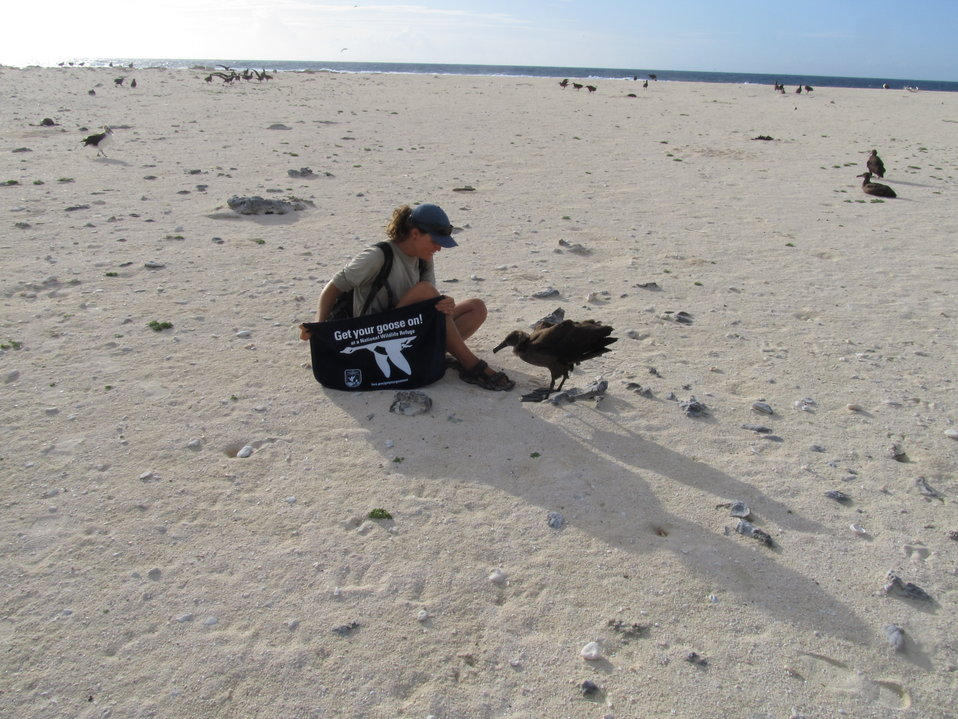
Get Your Goose On! - Albatross Style

Photo taken at Laysan Island in the Papahanaumokuakea Marine National Monument, Hawaiian Islands National Wildlife Refuge. Laysan is located approximately 800 miles northwest of Honolulu, Hawaii and is a remote field camp staffed year round for habitat restoration and population monitoring.